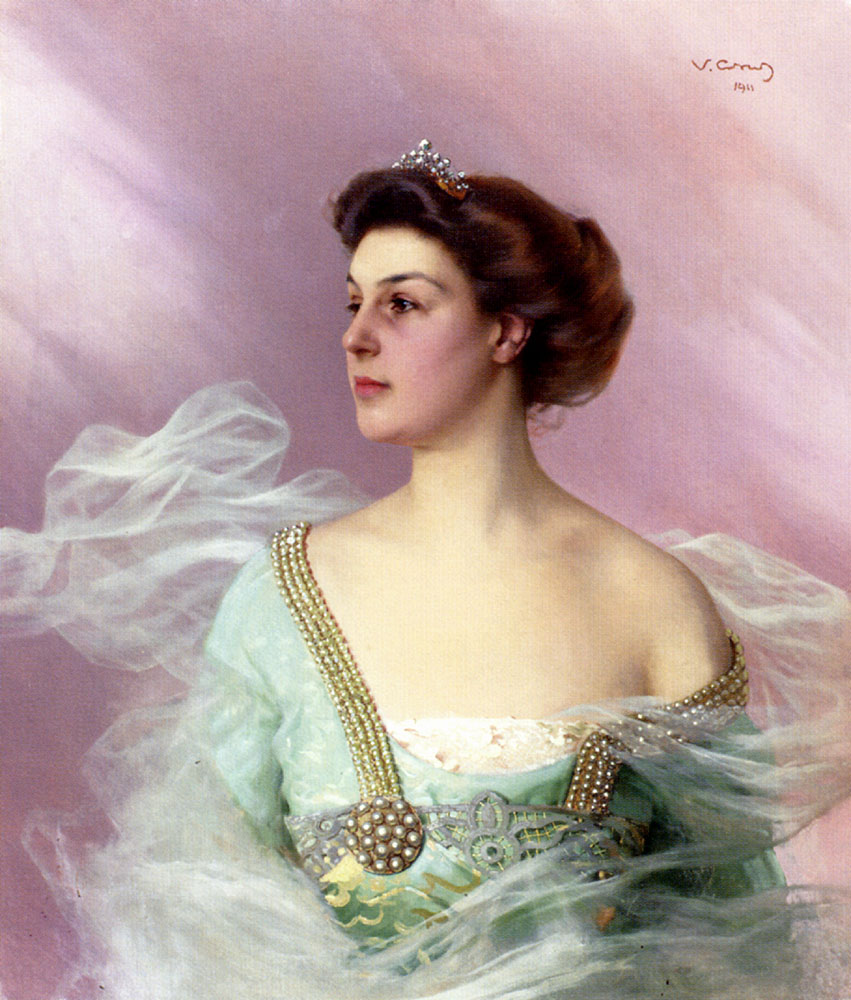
Portrait Of A Lady